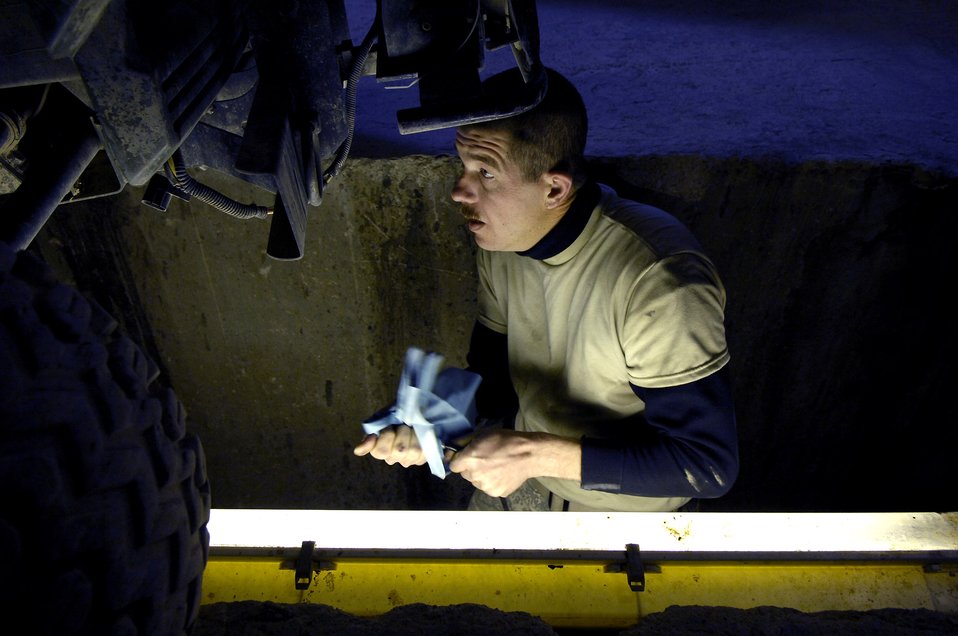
'In-lieu-of' Airmen keep Army rolling along

Tech. Sgt. James Nelson performs preventative maintenance an all terrain vehicle Nov. 1 at forward operating base Lagman, Afghanistan. Sergeant Nelson is a vehicle maintenance technician filling a 365-day Army 'in-lieu-of' tasking. Sergeant Nelson is deployed here Nellis Air Force Base, Nev.